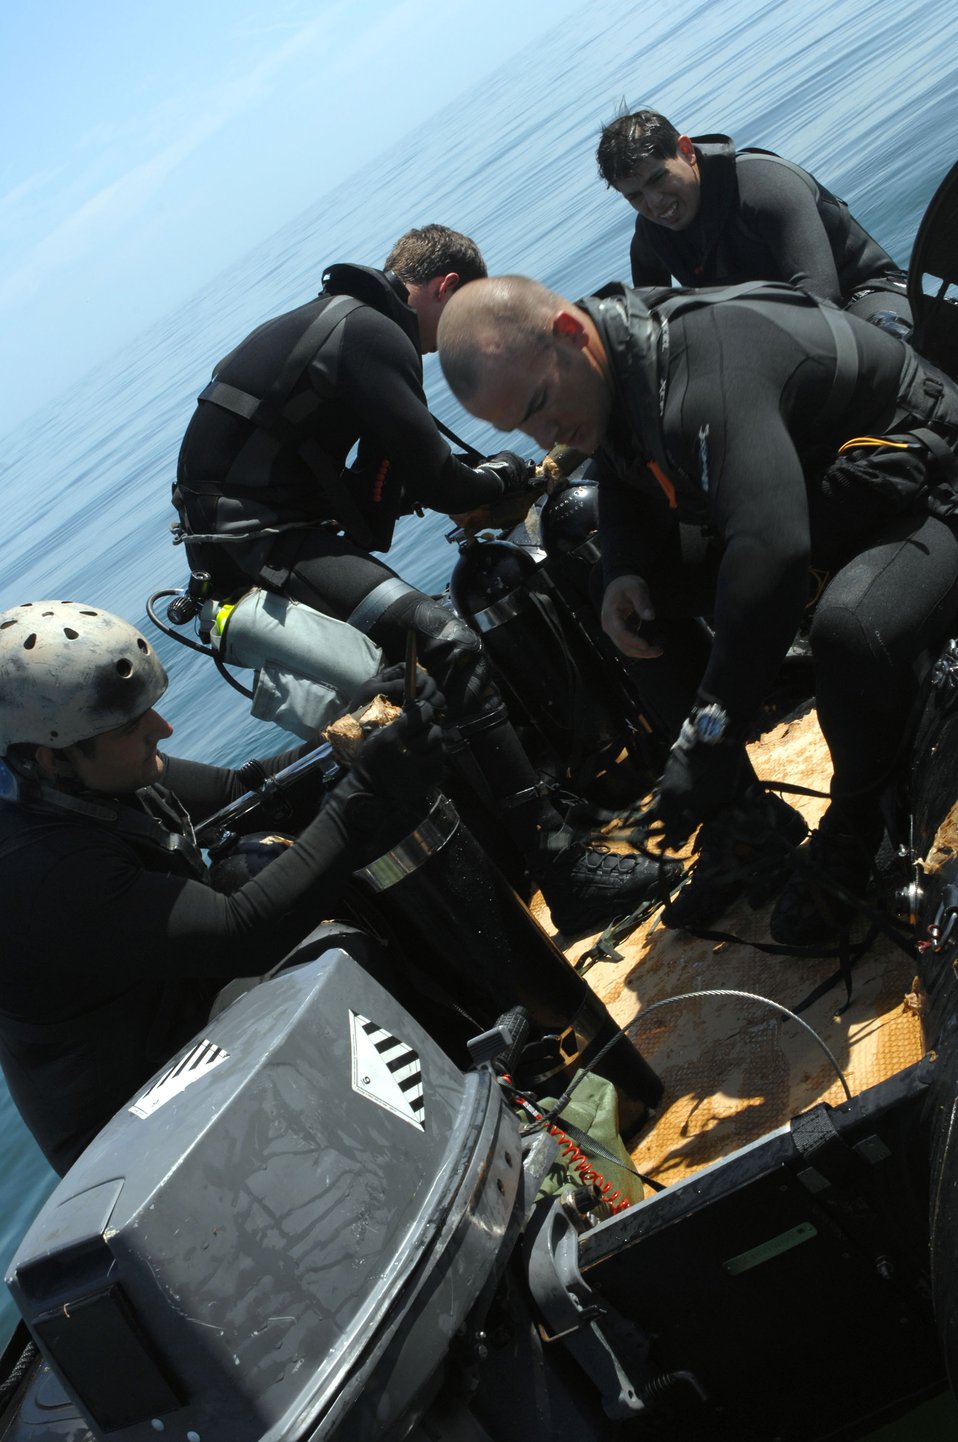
Commando Angel preps pararescuemen

A pararesue team from the 38th Rescue Squadron of Moody Air Force Base, Ga., prepares their gear for a crash recovery dive scenario March 22 in the Gulf of Mexico. The scenario was part of the Moody AFB's operational readiness exercise, Commando Angel.